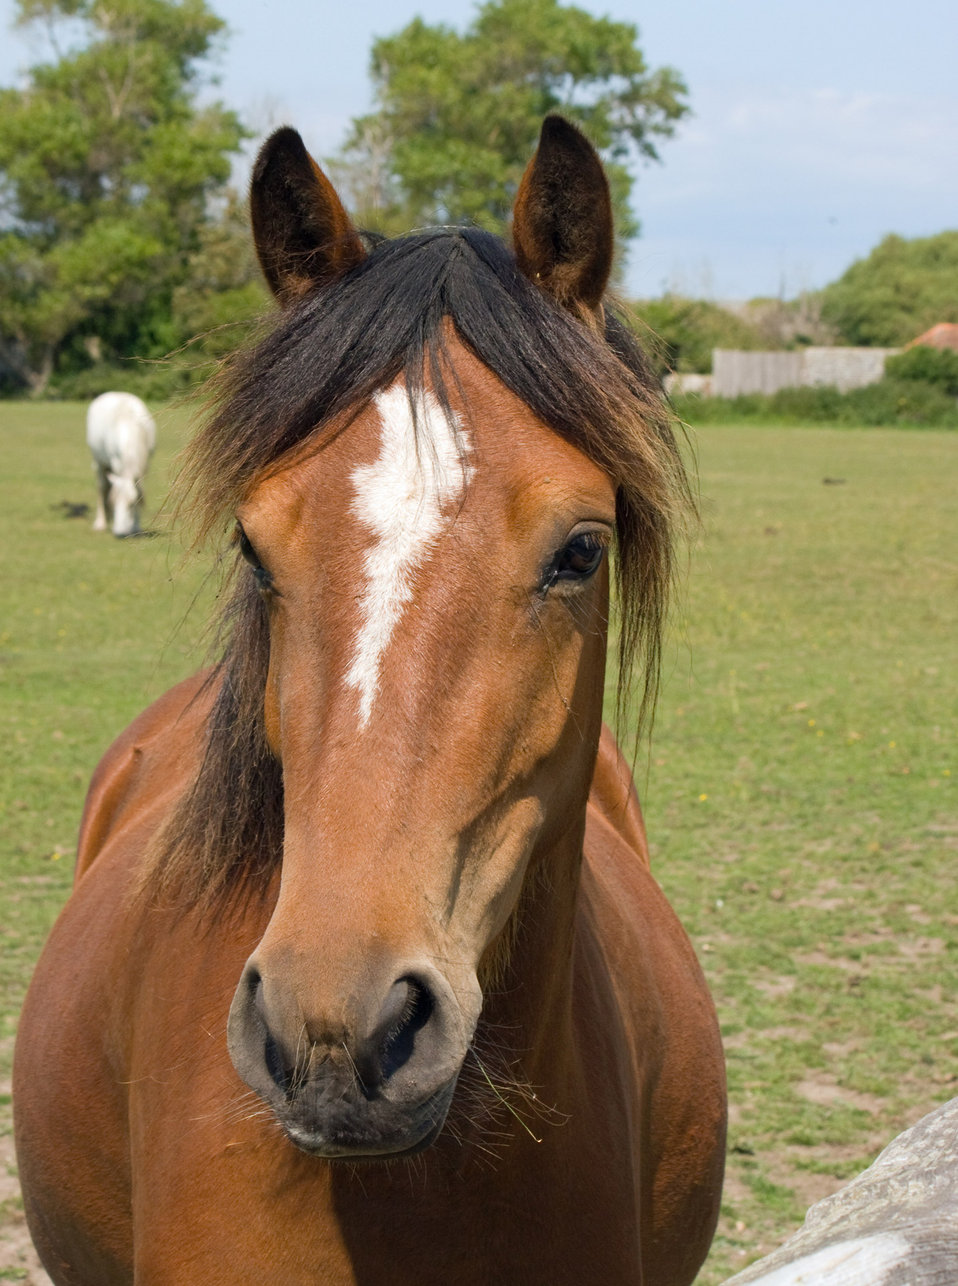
Horse portrait

Chestnut horse in field.